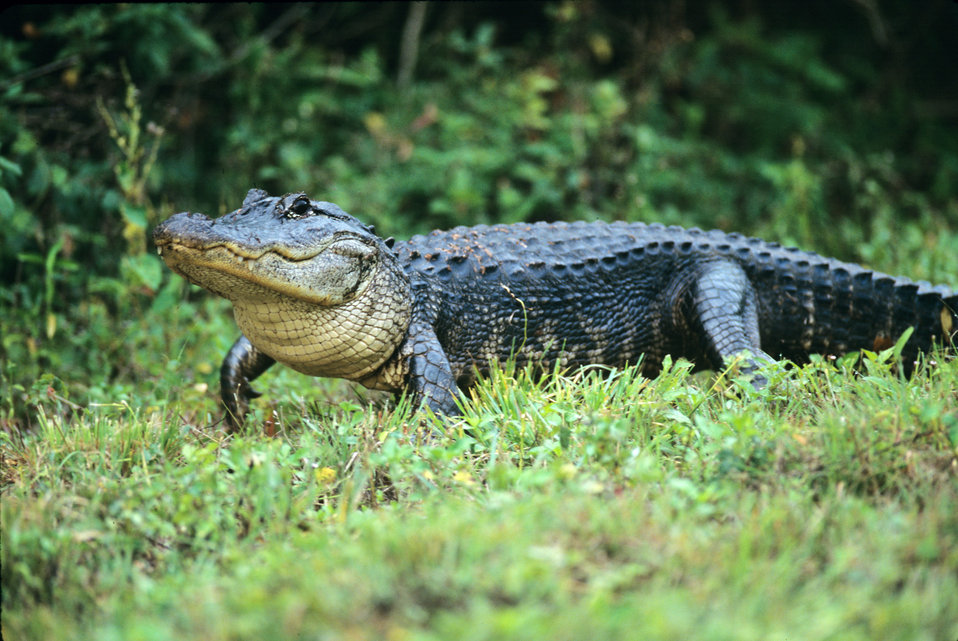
An American alligator treads through Everglades National Park in Florida on October 10, 1995. American alligators are found in the southeastern U.S. with over a million American alligators inhabiting Florida and Louisiana. Southern Florida is the only place where both alligators and crocodiles live side by side. American alligators live in freshwater environments, such as ponds, marshes, wetlands, rivers, lakes, and swamps, as well as in brackish environments. When they construct gator holes in the wetlands, they increase plant diversity and also provide habitat for other animals during drought periods. They are therefore considered an important species for maintaining ecological diversity in wetlands.